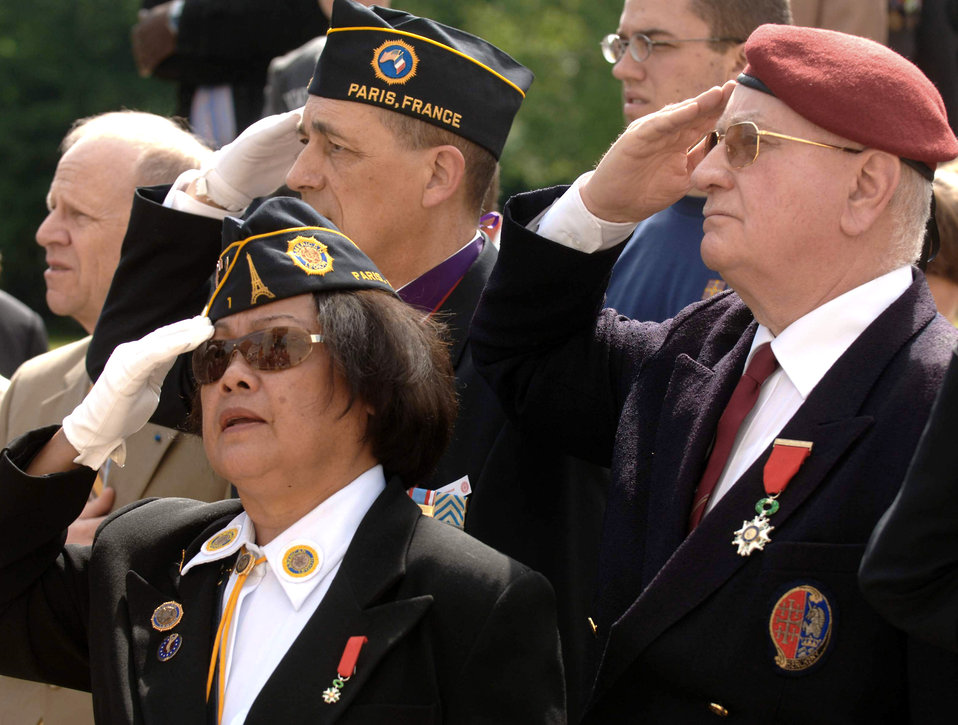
America's first combat aviators memorialized

American Legion's Post No. 1 Commander, Clarita Georghegan joins Alain Raye and George La Peyre in honoring the colors during the Lafayette Escadrille Memorial ceremony outside of Paris May 23.